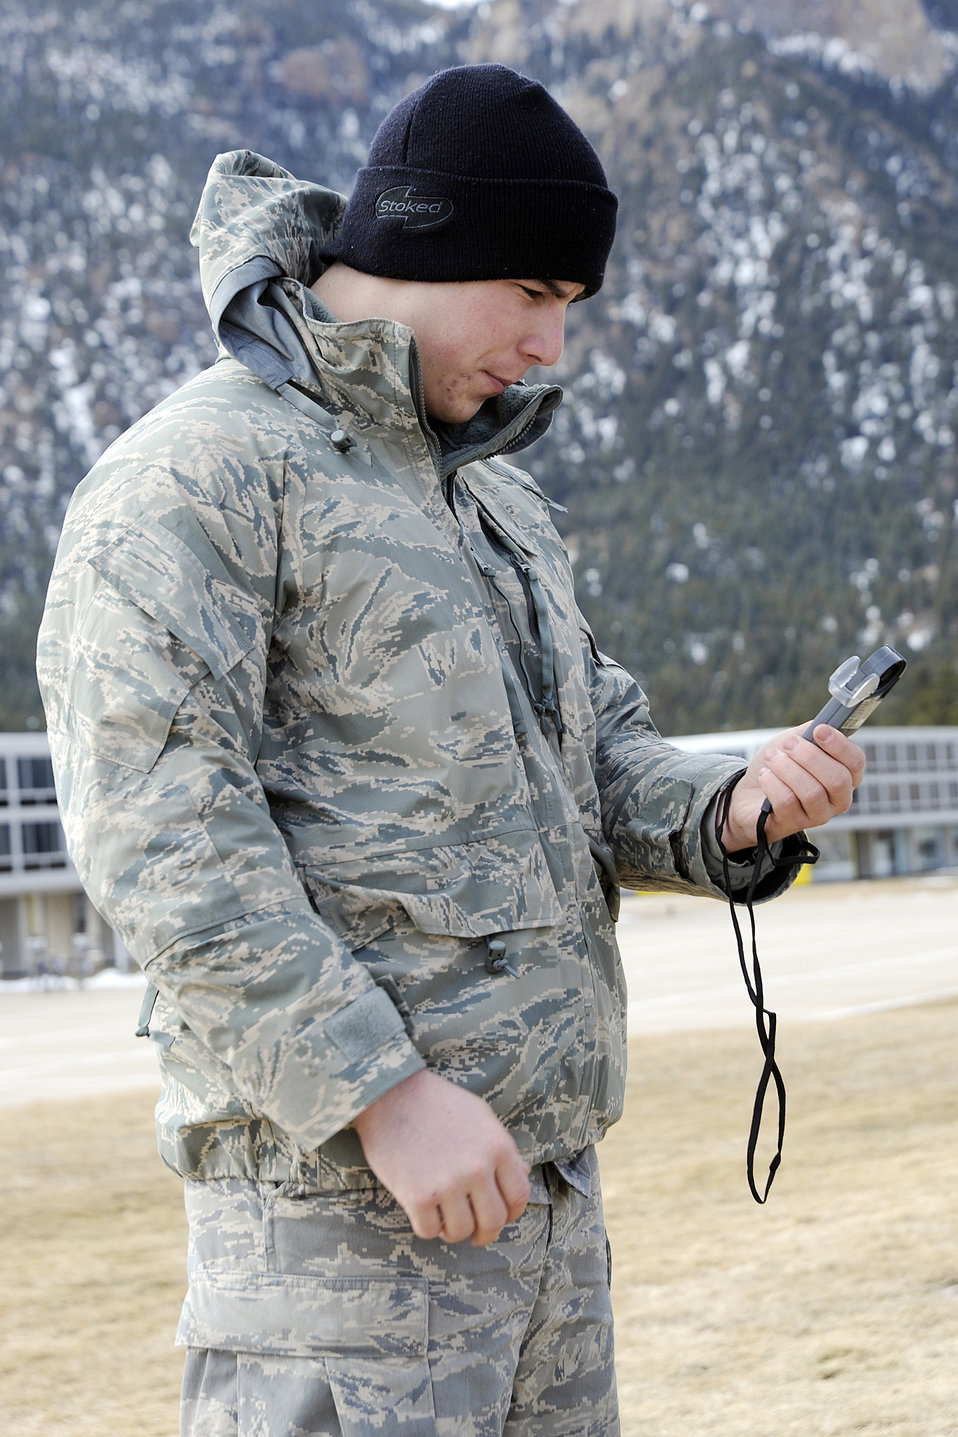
U.S. Air Force Academy, Colo-- Cadet 3rd Class Karl Berwyn takes baseline atmospheric and GPS measurements in preparation of a weather balloon launch as part of the Meteorology 320 course, Introduction to Meteorology and Aviation Weather. This course teaches the fundamentals of meteorology with special emphasis placed on flight weather and its impact on aviation.